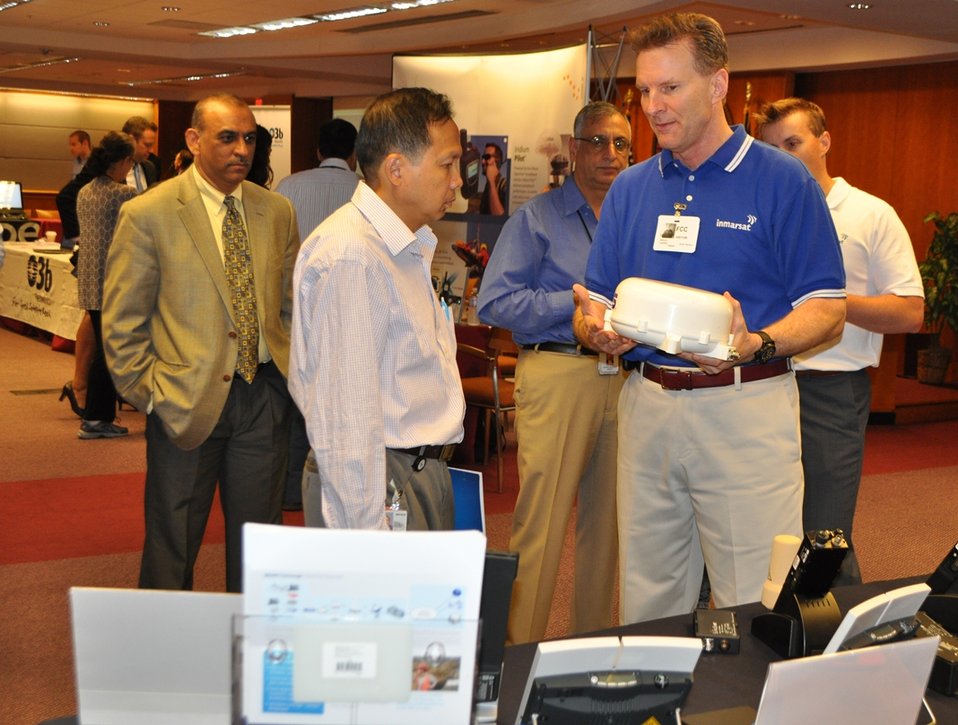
5.14.2014 Satellite Technology Demonstration

Satellite Technology Demonstration at FCC